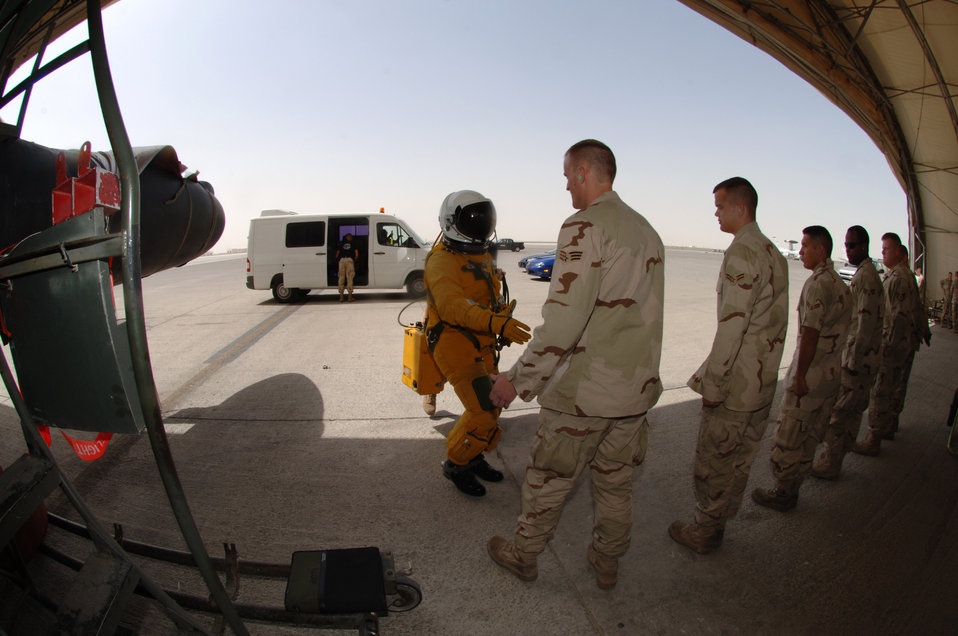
U-2 squadron continues to fly high

Capt. Ross Franquemont, a U-2 Dragon Lady pilot from the 99th Expeditionary Reconnaissance Squadron at an air base in Southwest Asia, shakes the hands of the crew chiefs Mar. 5 who have prepared his jet for a reconnaissance mission. The 380th Air Expeditionary Wing hosts the only U-2 squadron in the area of responsibility, providing high-altitude intelligence, surveillance and reconnaissance for support in winning the war on terror.